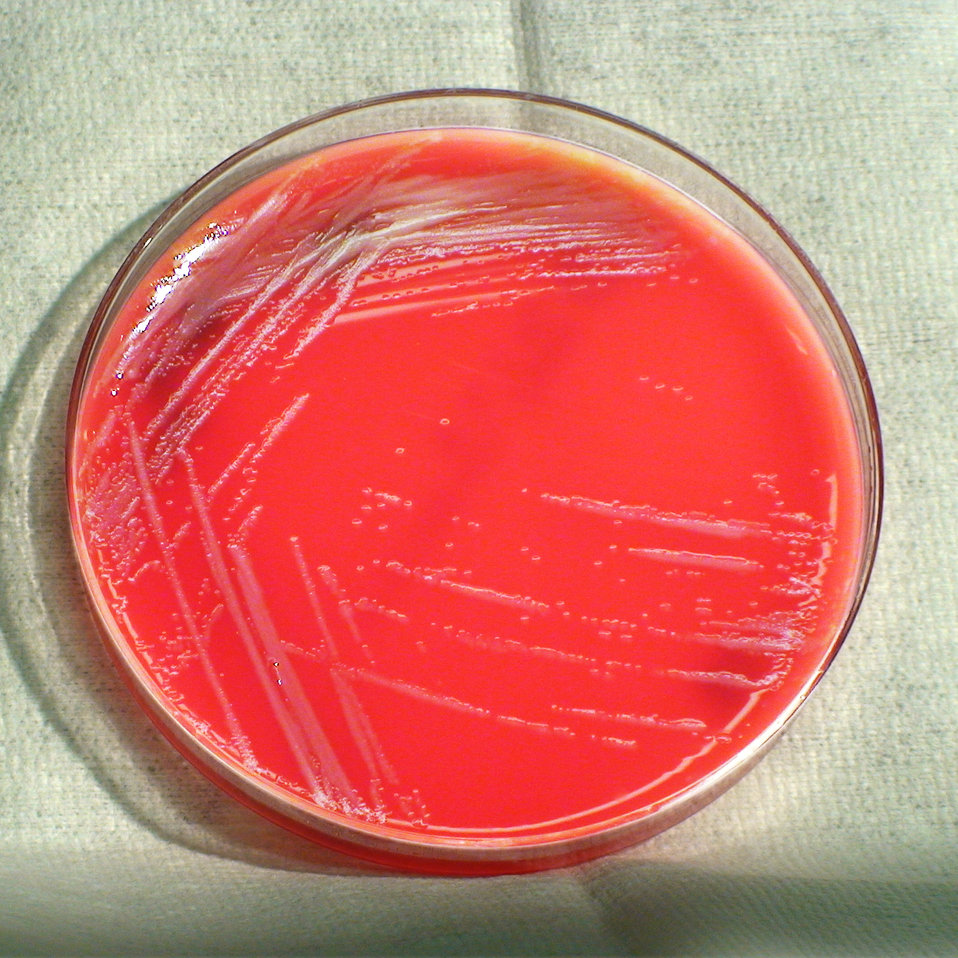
This photograph depicts the colonial morphology displayed by Gram-negative Burkholderia thailandensis bacteria, which was grown on a medium of sheep's blood agar (SBA), for a 24 hour time period, at a temperature of 42�C. See PHIL 12432, for a closer view of these bacterial colonies. Also, see both PHIL 12401 and 12402, for views of this bacterial specie, grown on the same medium, but at a lesser temperature (37�C), and for twice the time (48hr). PHIL 12408 and 12409 also display B. thailandensis colonial growth on the same medium, but at the same temperature, however, at twice the time period (48hr). Finally, PHIL 12423 and 12424 display this specie's bacterial growth, again on SBA, and for the same amount of time (24hr), but at a lesser temperature (37�C).